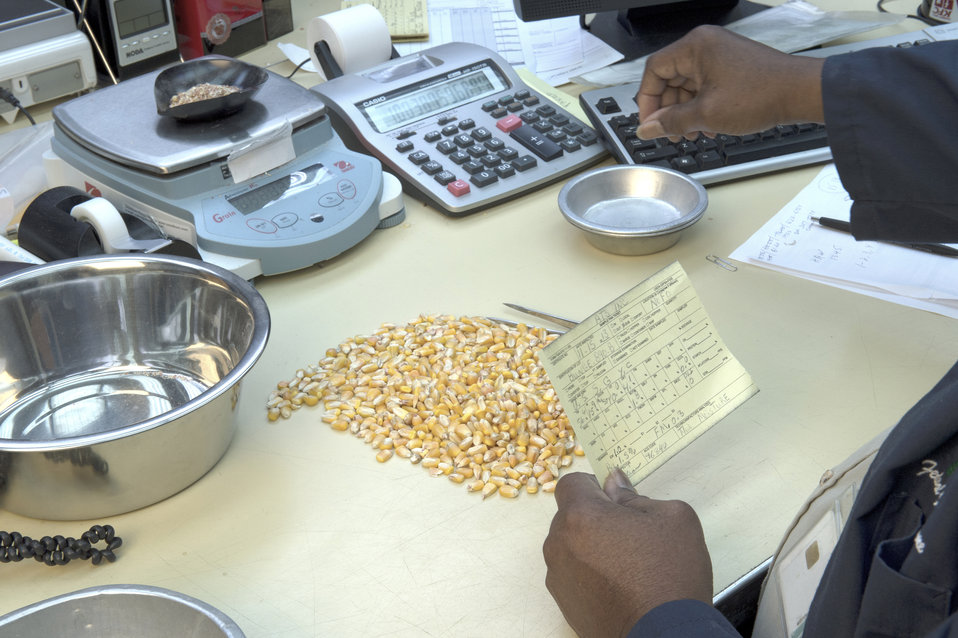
A U.S. Department of Agriculture (USDA) Grain Inspection, Packers and Stockyards Administration (GIPSA) Federal Grain Inspection Service (FGIS) scientist tests corn at the FGIS inspection laboratory in New Orleans, LA on Monday, Nov. 18, 2013.